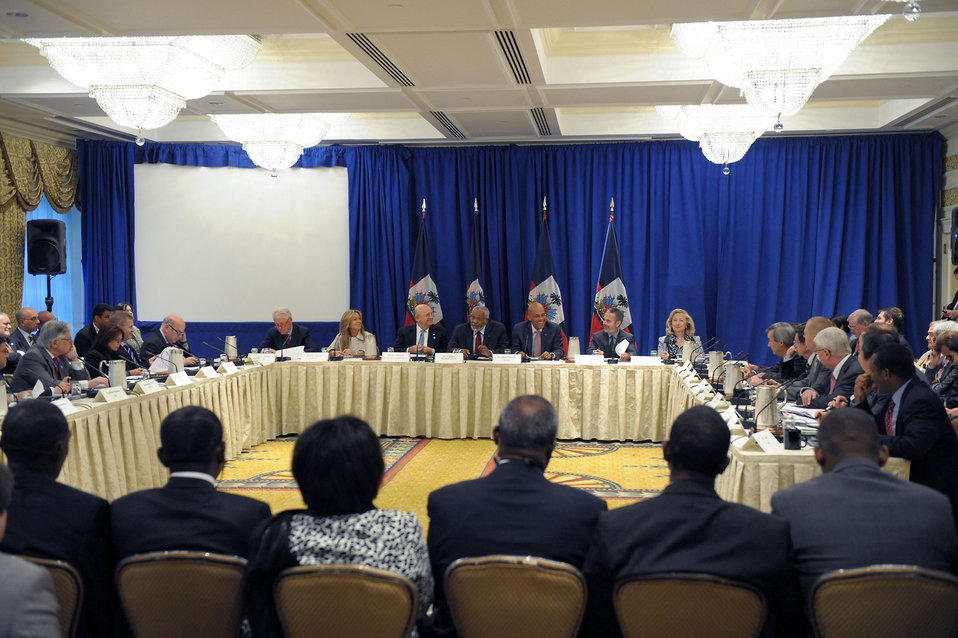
Secretary Clinton Delivers Remarks at the Haiti Key Players Ministerial Meeting

U.S. Secretary of State Hillary Rodham Clinton delivers remarks at the Haiti Key Players Ministerial Meeting, at the Intercontinental Hotel’s Astor Room in New York, New York, on September 19, 2011.